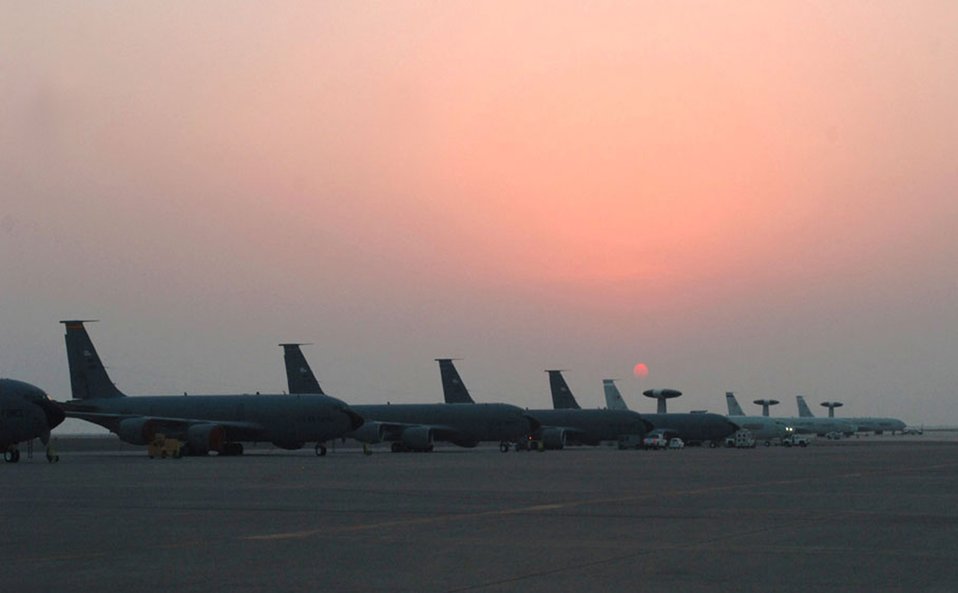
Airpower Summary for Aug. 8, 2007

KC-135 Stratotankers and E-3 Sentry airborne warning and control system aircraft await their next missions on the ramp at a deployed location in Southwest Asia.